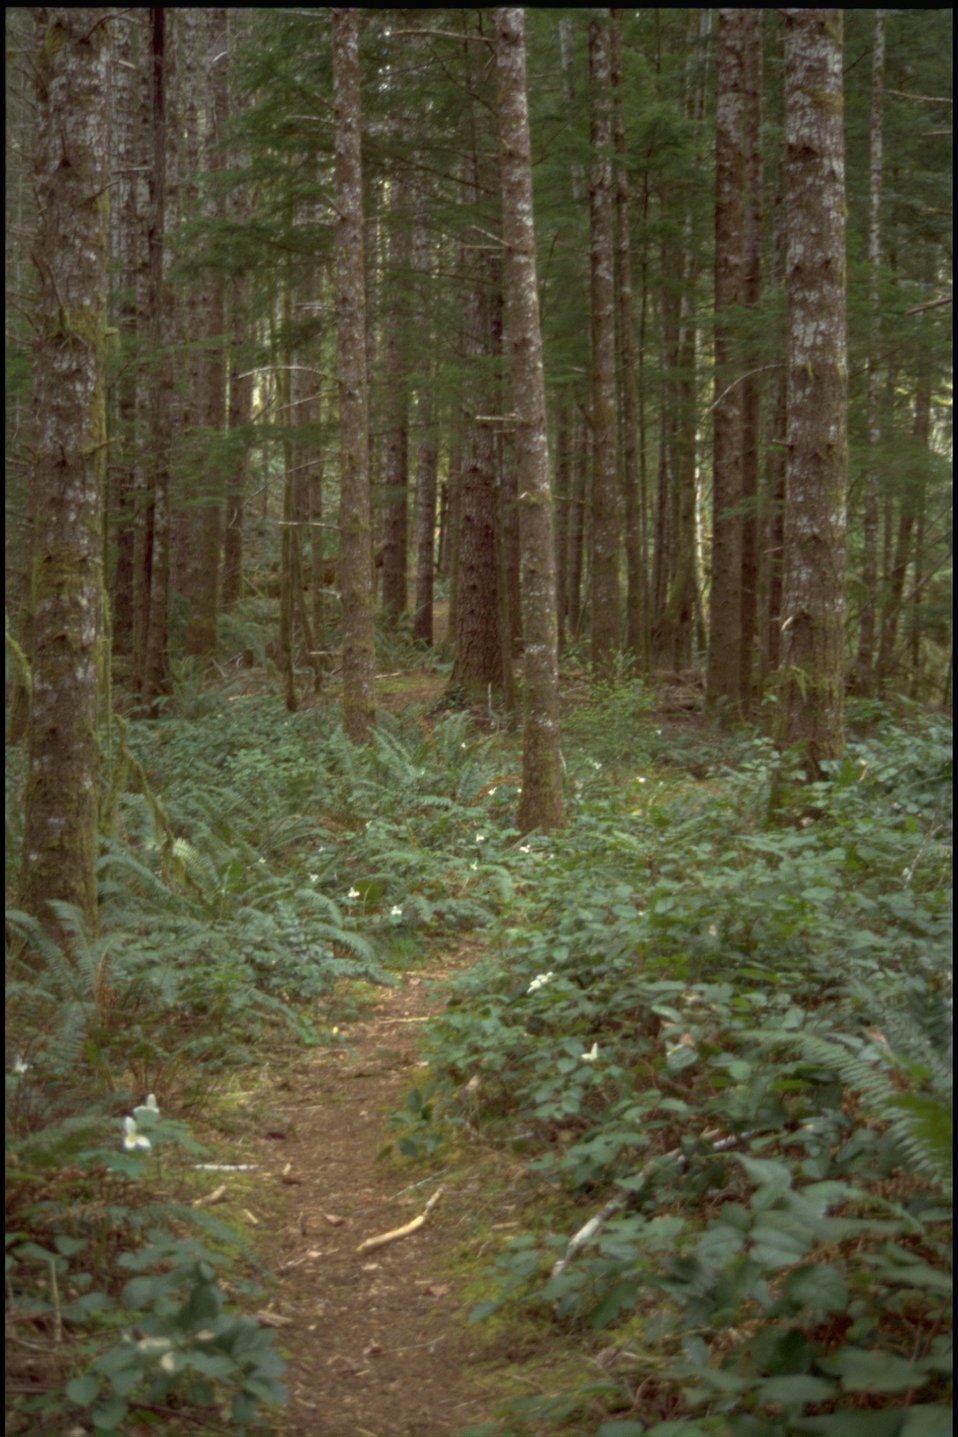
Old growth trail.